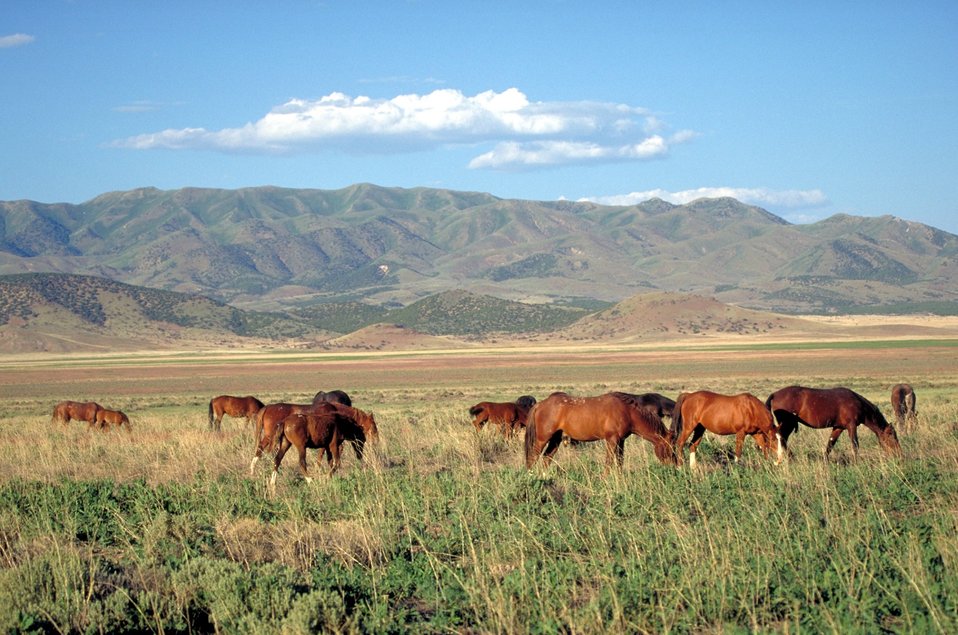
Onaqui Herd near Dugway, Utah.